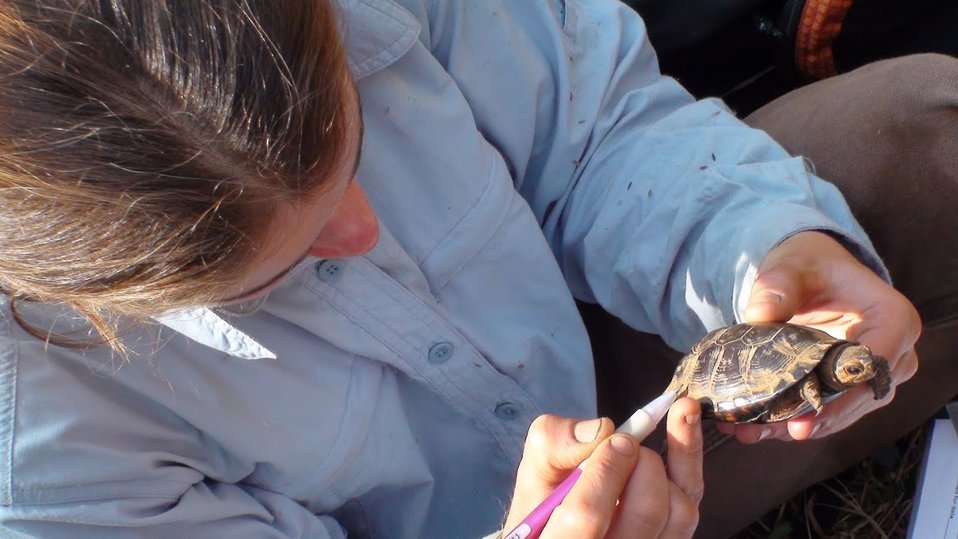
Bog turtle

Scientific name: Clemmys muhlenbergii
Status: Threatened and Similarity of appearance

Gabrielle Graeter observing scutes.